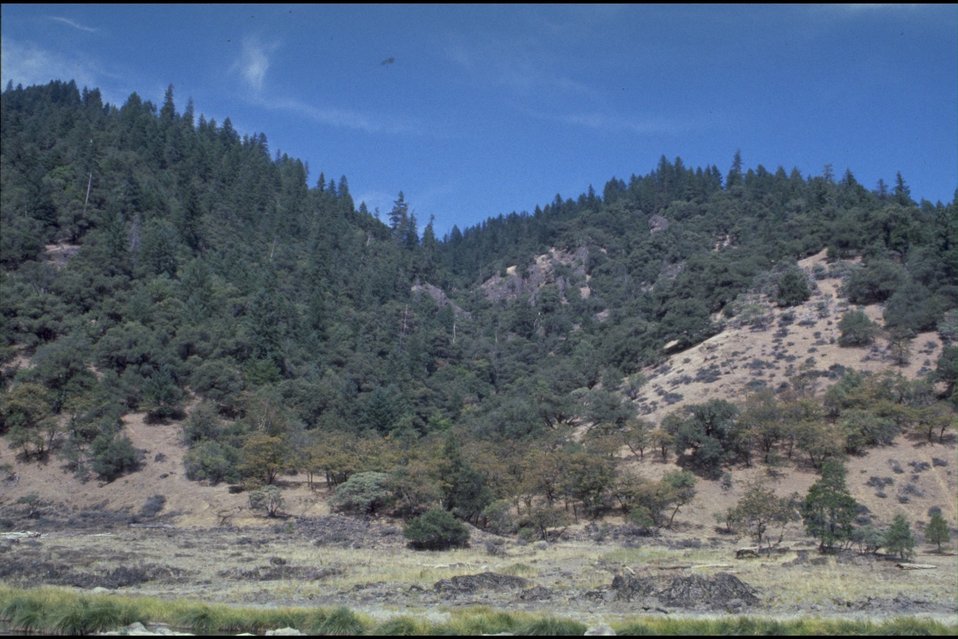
The Tyee campsite area in the Wild Section of the river.